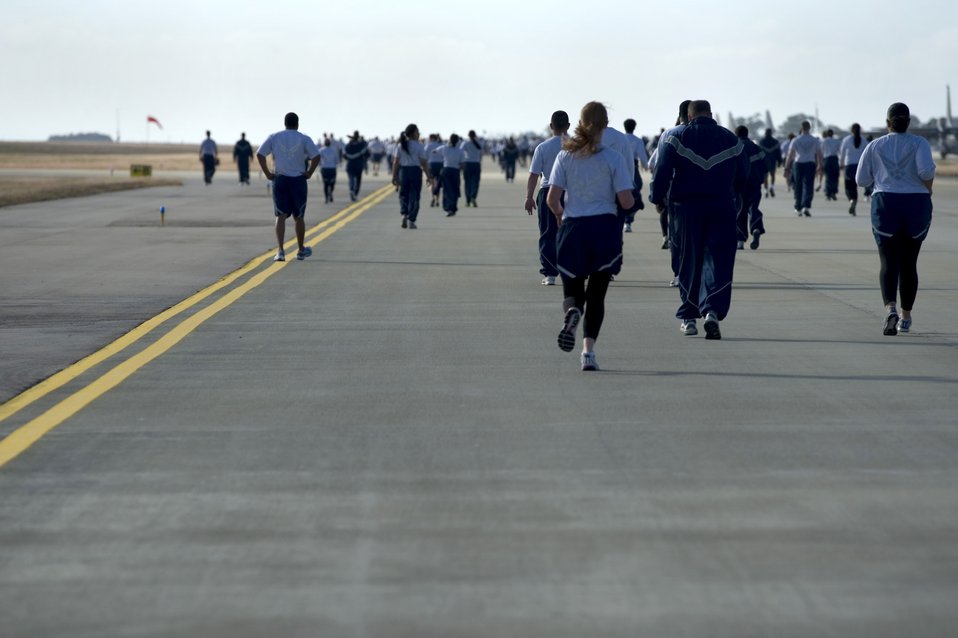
1 SOW Wing Run

U.S. Air Force Airmen finish a 5 km base-wide run, Hurlburt Field, Fla., Nov. 7, 2011. Air Commandos participated in this run to promote team work and unity with the host wing, 1st Special Operations Wing.